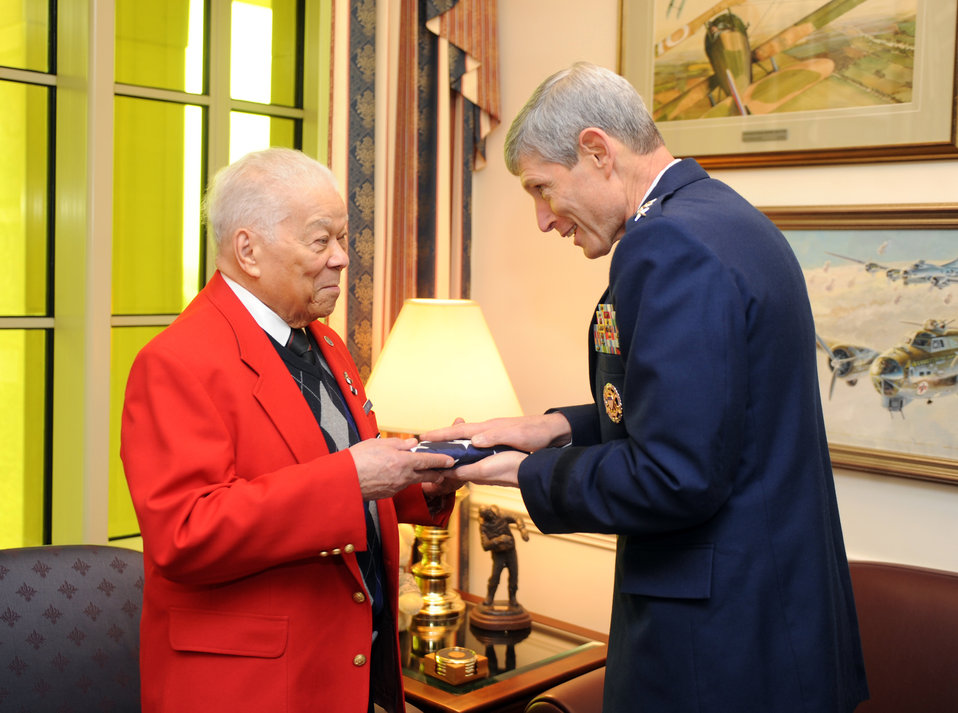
‘Red Tail’ member visits the Pentagon

Air Force Chief of Staff Gen. Norton Schwartz presents an American flag that was flown over the Pentagon to retired Lt. Col. Walter McCreary on March 16, 2012. Schwartz hosted McCreary, an original Tuskegee Airman, for an office call.